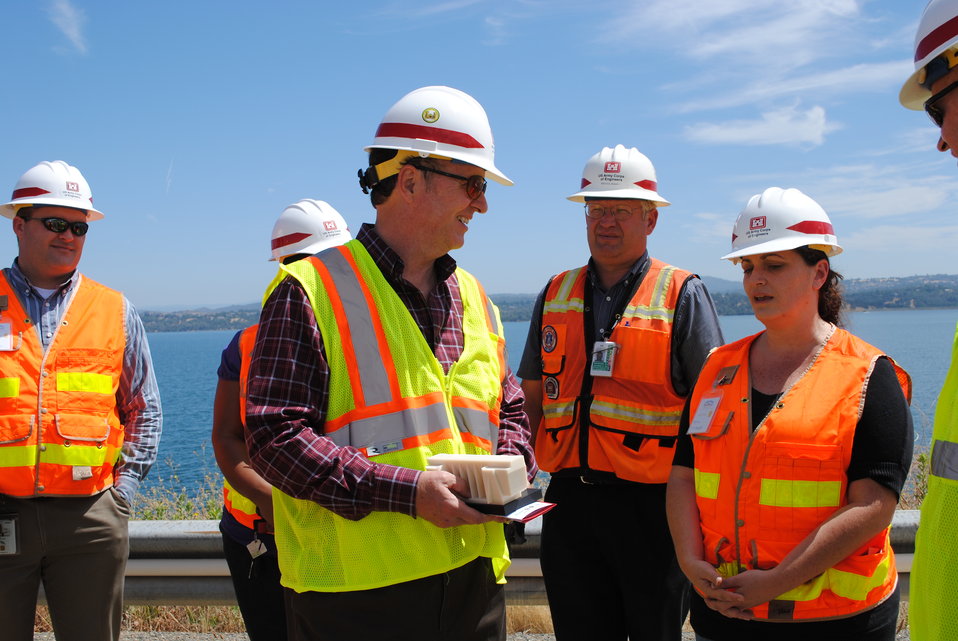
Congressman Dan Lungren gets updates from project manager Beth Salyers

U.S. Army Corps of Engineers Sacramento District project manager Beth Saylers explains to Congressman Dan Lungren Aug.12, 2011, that while construction of a new control structure and auxiliary spillway are well underway, the Folsom Dam Permanent Operation Study and Folsom Dam Raise Project are also moving forward. The operation study will develop the manual that guides effective, efficient operation of the dam for water users, reduced flood risk, and dam safety.